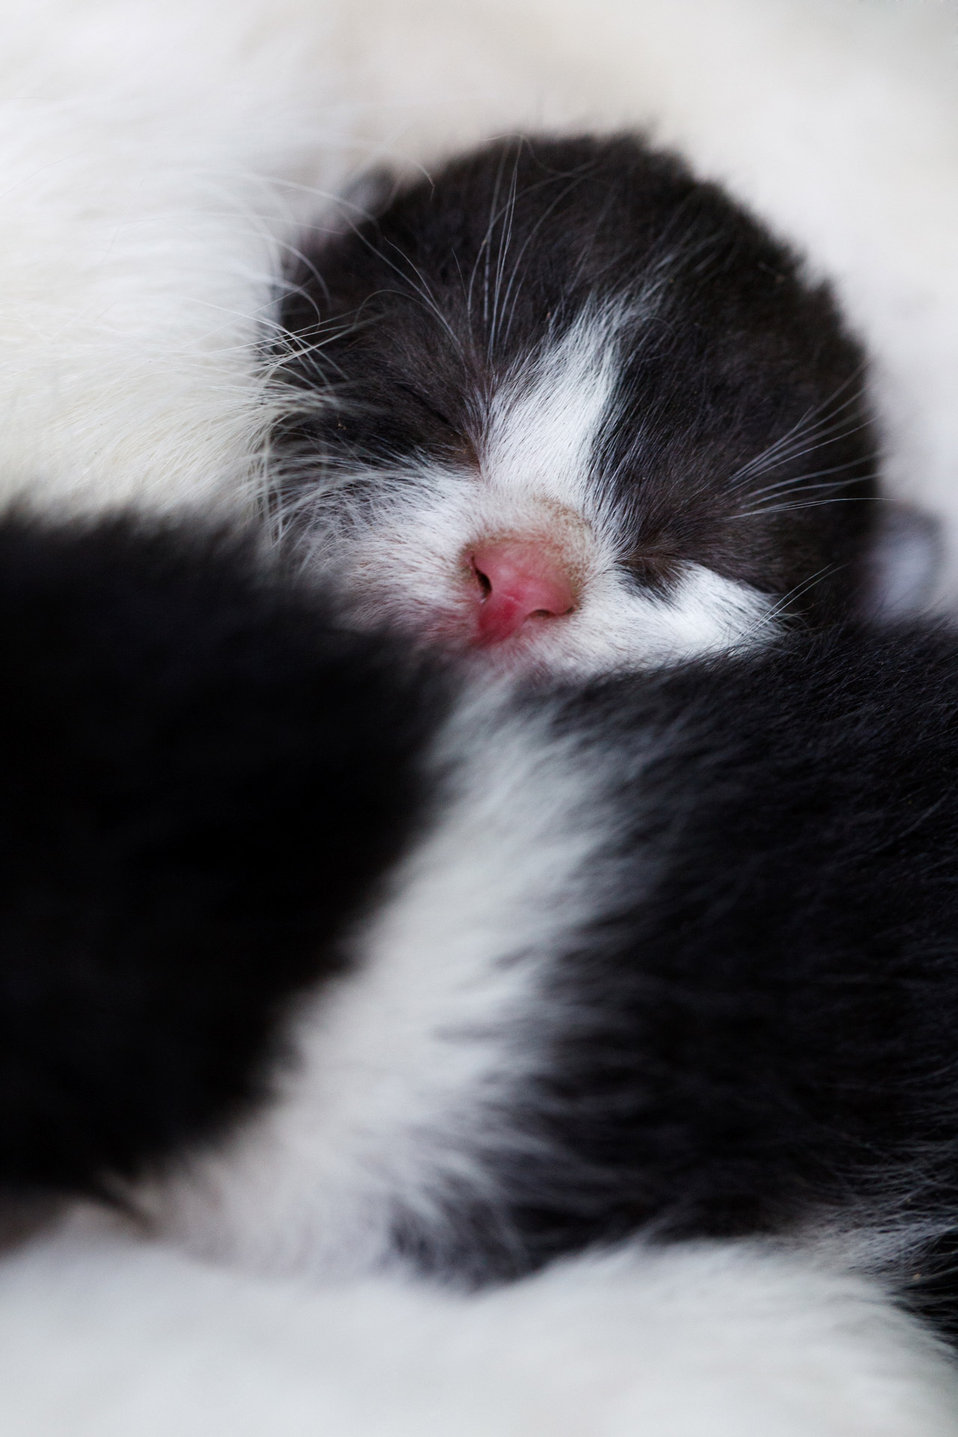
Sleeping kitten

Sleeping one day old kitten.